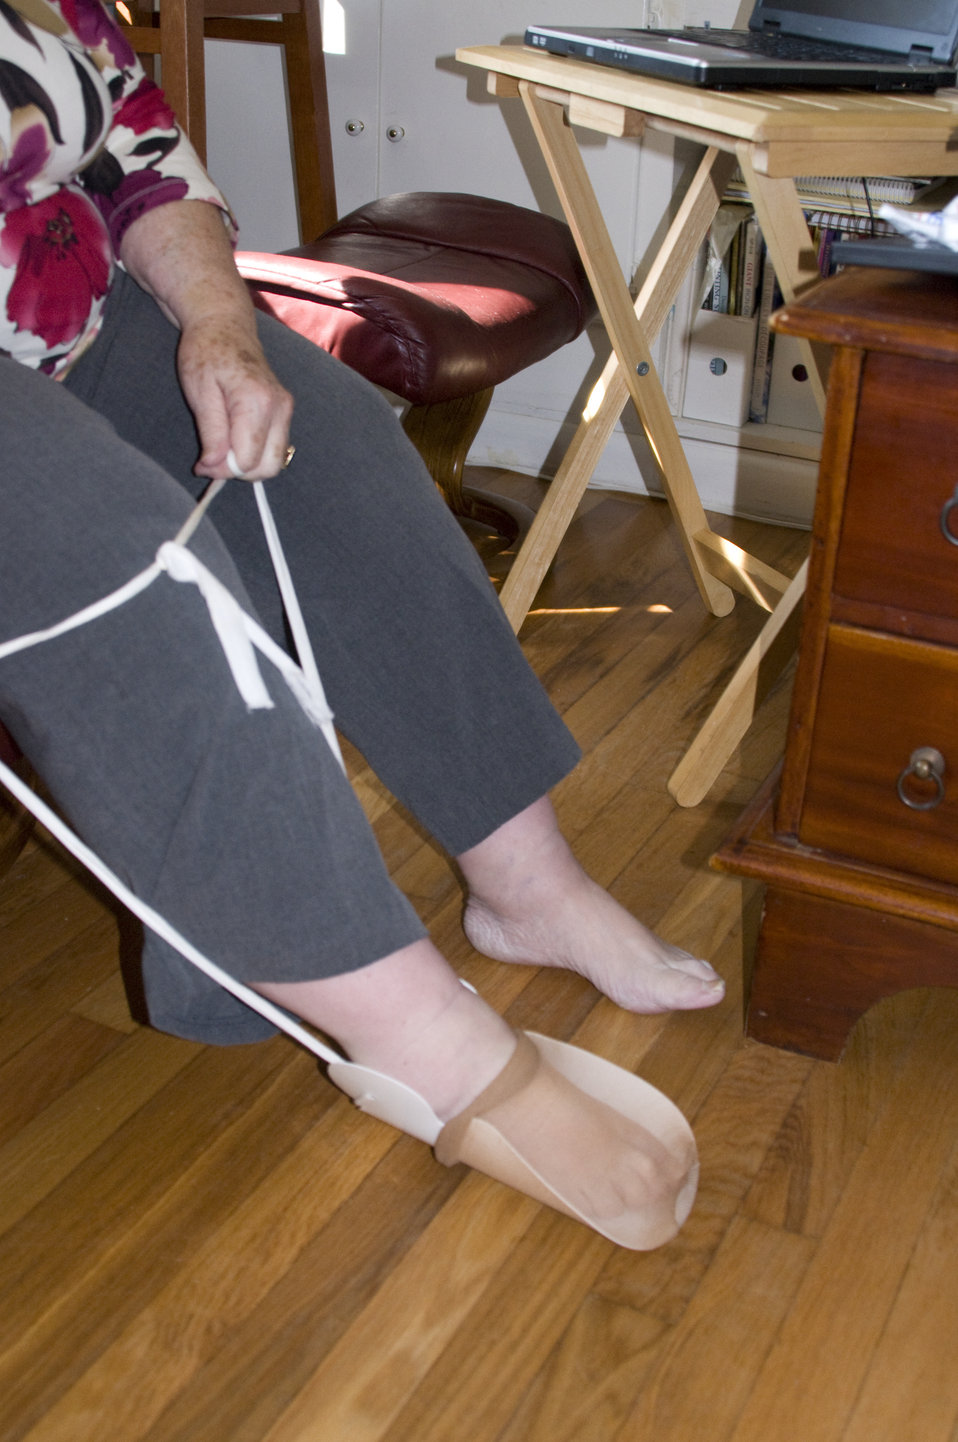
Beginning with her right foot, and unable to bend over, this female rheumatoid arthritis patient was pictured here in the process of donning her stockings with the help of sockaid, or a sock-donning device. The stocking, or sock, is placed over the far end of the half-pipe tube, and using the cords attached to the half-pipe, the device is pulled up the leg, thereby, inching up the stocking, and when applied, slips out of the sock once it is up, and over the lower leg.